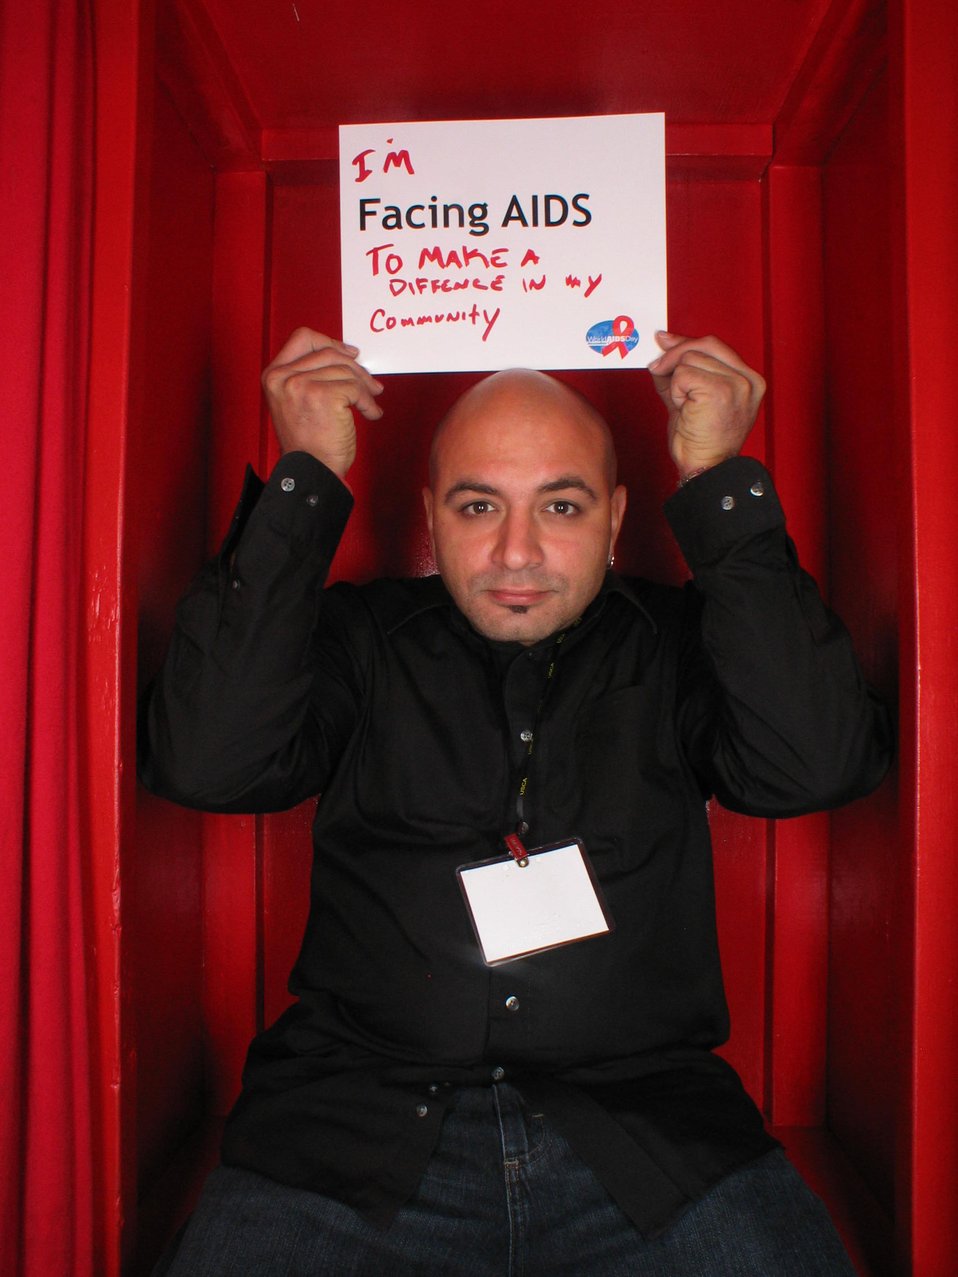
I'm Facing AIDS to make a difference in my community.